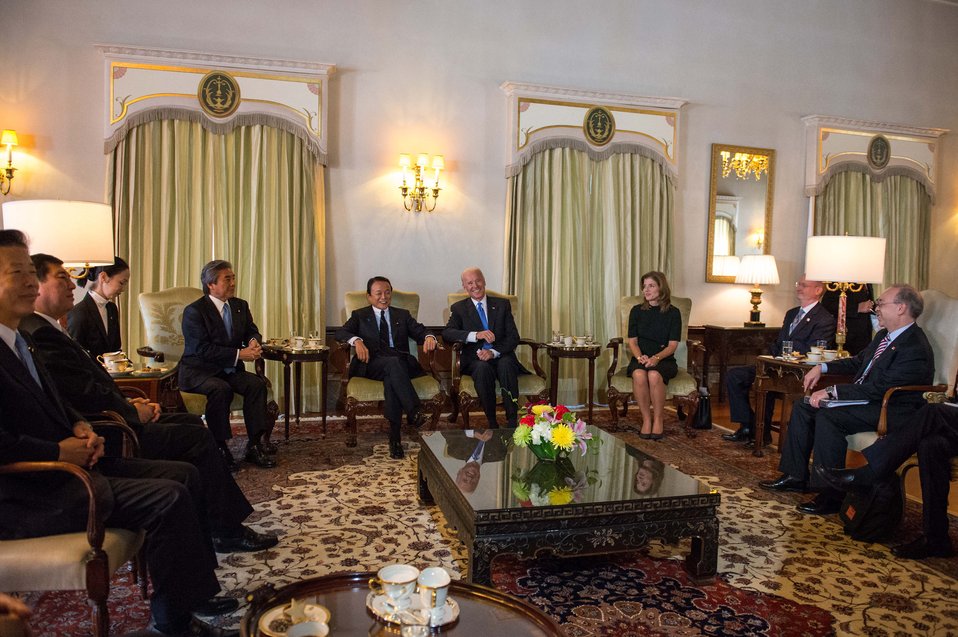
Vice President Biden Meets With Japanese Political Leaders

Vice President Joseph Biden, with U.S. Ambassador to Japan Caroline Kennedy and U.S. Assistant Secretary of State for East Asian and Pacific Affairs Daniel Russel, meets with Japanese Deputy Prime Minister and Minister of Finance Taro Aso and other Diet Members including: from left: Chief Representative of the New Komeito Party Natsuo Yamaguchi, Secretary General of the Liberal Democratic Party (LDP) Shigeo Ishiba, and Chair of the Japan-U.S. Parliamentary Friendship League Hirofumi Nakasone, in Tokyo, Japan, on December 3, 2013.